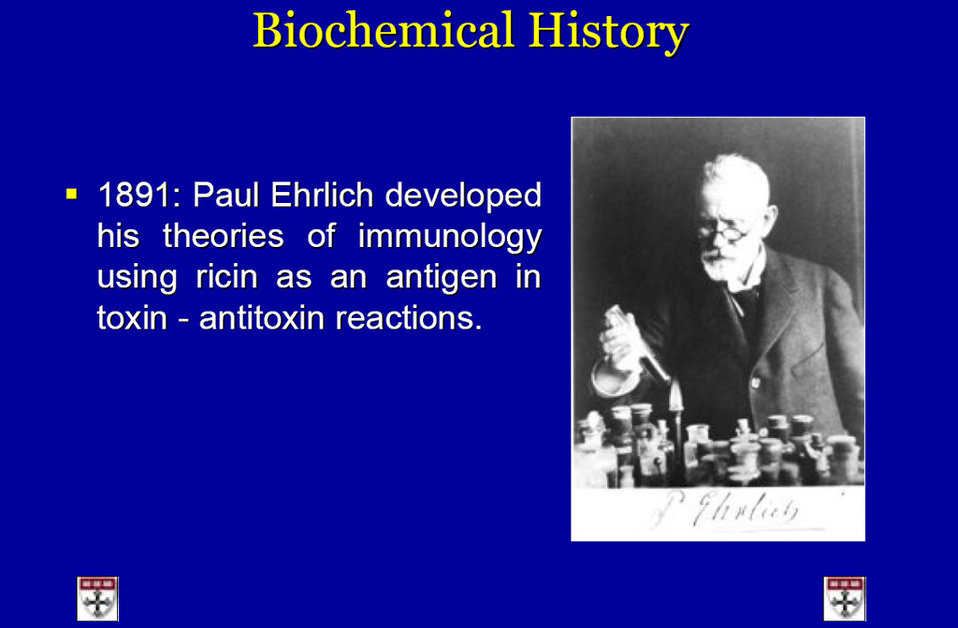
This presentation highlights the history, chemistry, and uses of ricin, a highly toxic poison made from castor beans.